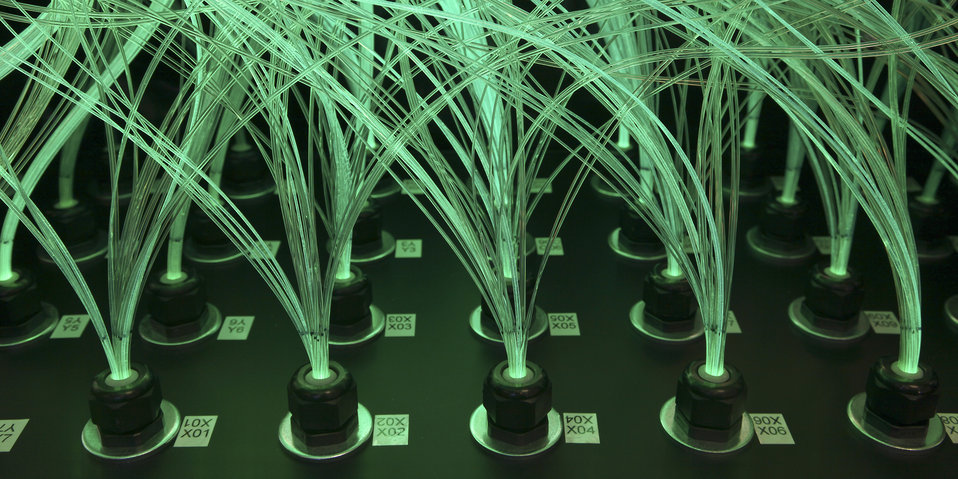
Photo of the Week: The VULCAN Diffractometer

The VULCAN diffractometer at Oak Ridge National Laboratory’s Spallation Neutron Source (SNS) was built to take measurements of engineered components like a jet engine turbine blade or the frame of a car. VULCAN can 'see' inside the material and make three dimensional maps of the distance between atoms in critical sections. Scientists can use these maps to determine if the atoms are being squeezed together or pulled apart — signs of stress in the materials. This photo highlights the optical fibers of a VULCAN detector module. The fibers transmit light signals created by captured neutrons to photo multiplier tubes where the signals are amplified and then sent into a data acquisition system.